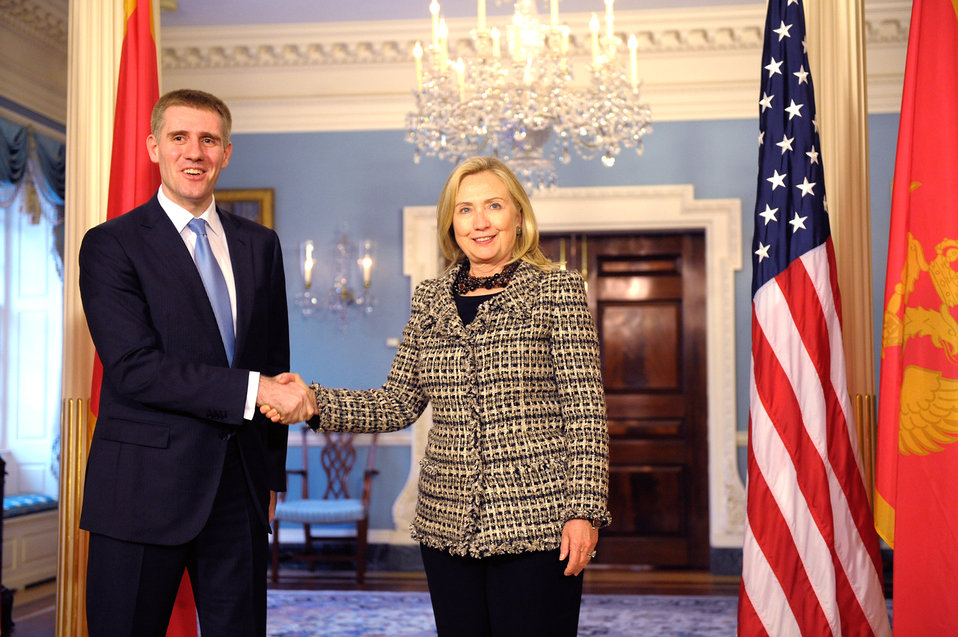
Secretary Clinton Meets With Montenegrin Prime Minister Luksic

U.S. Secretary of State Hillary Rodham Clinton meets with Montenegrin Prime Minister Igor Luksic at the U.S. Department of State in Washington, D.C., on October 11, 2011.